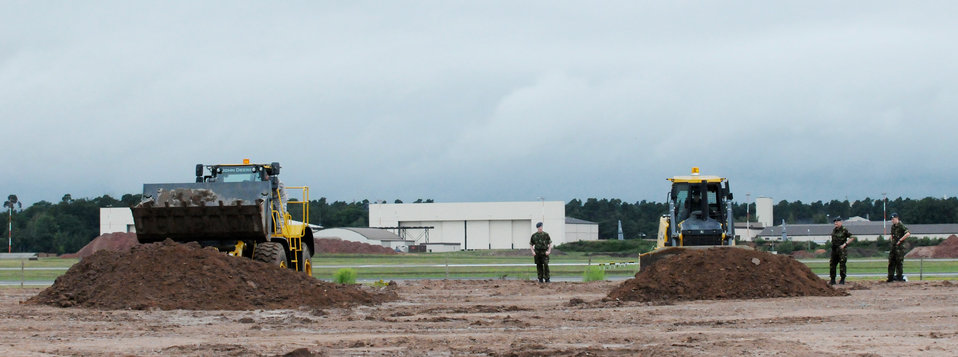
British cadets nurture 'spirit of adventure' at Ramstein

Royal Air Force air cadets operate heavy equipment during a July 14 visit to Ramstein Air Base, Germany. RAF cadets visited Ramstein AB for a week of leadership development and contingency skills training.